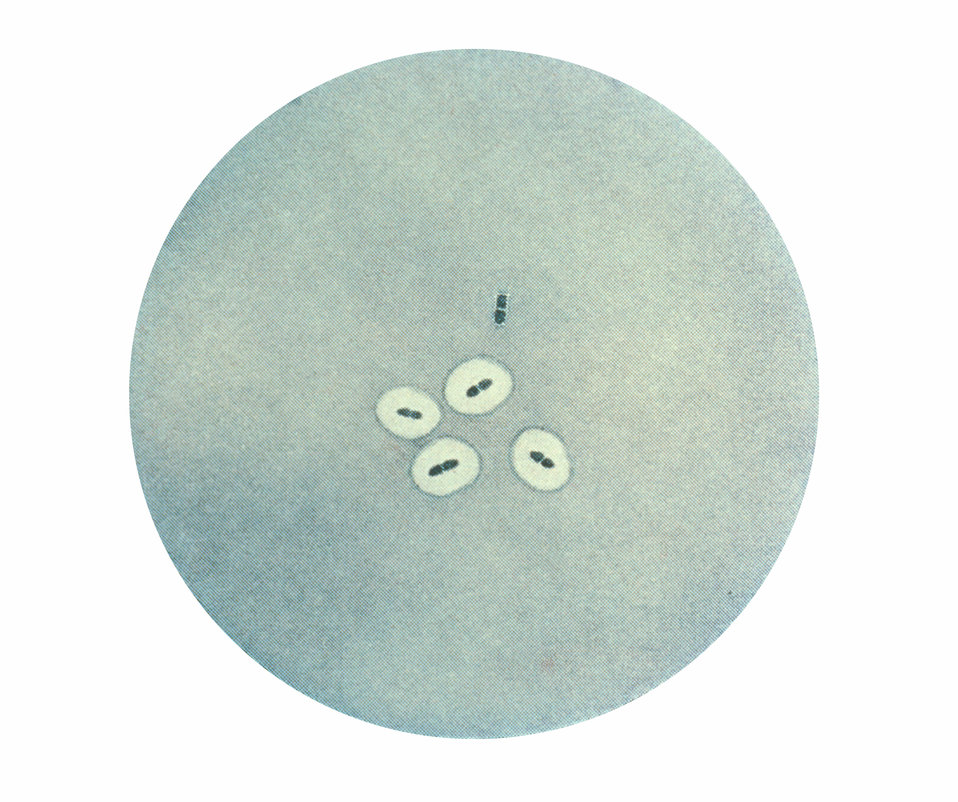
Photomicrograph of Streptococcus pneumoniae bacteria revealing capsular swelling using the Neufeld-Quellung test.